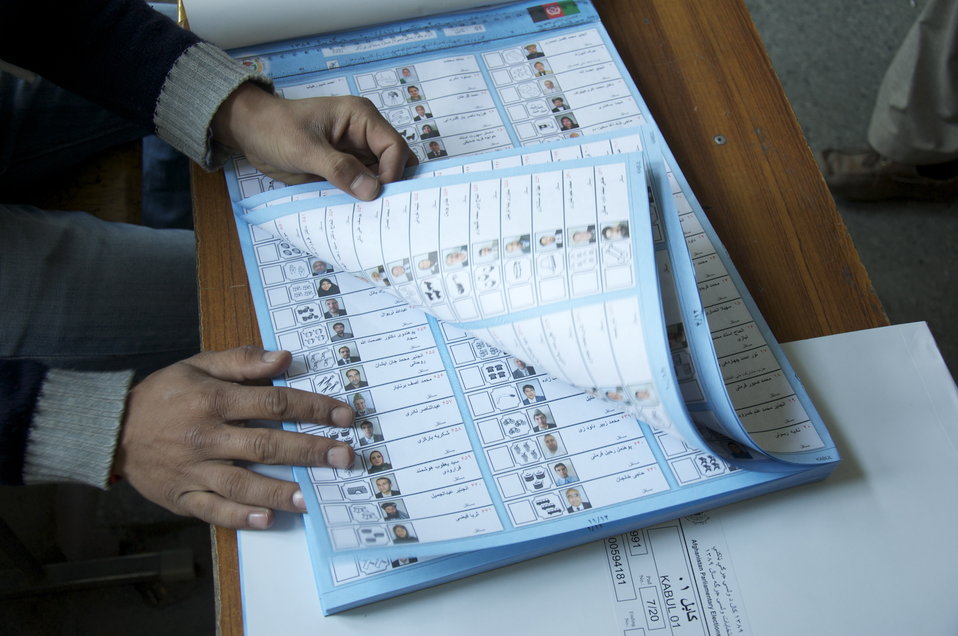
Election Ballots